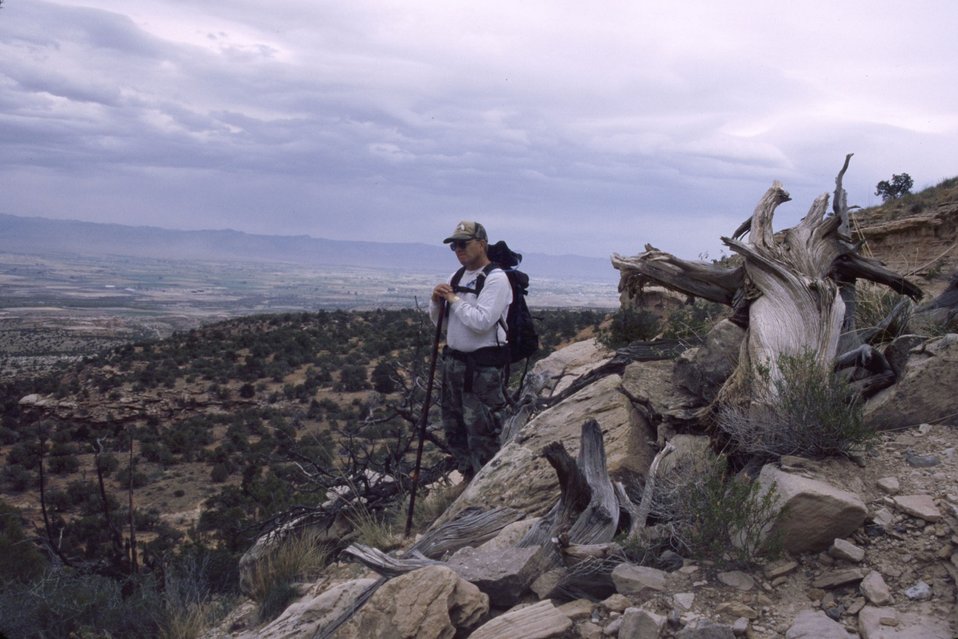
Hiker on Black Ridge